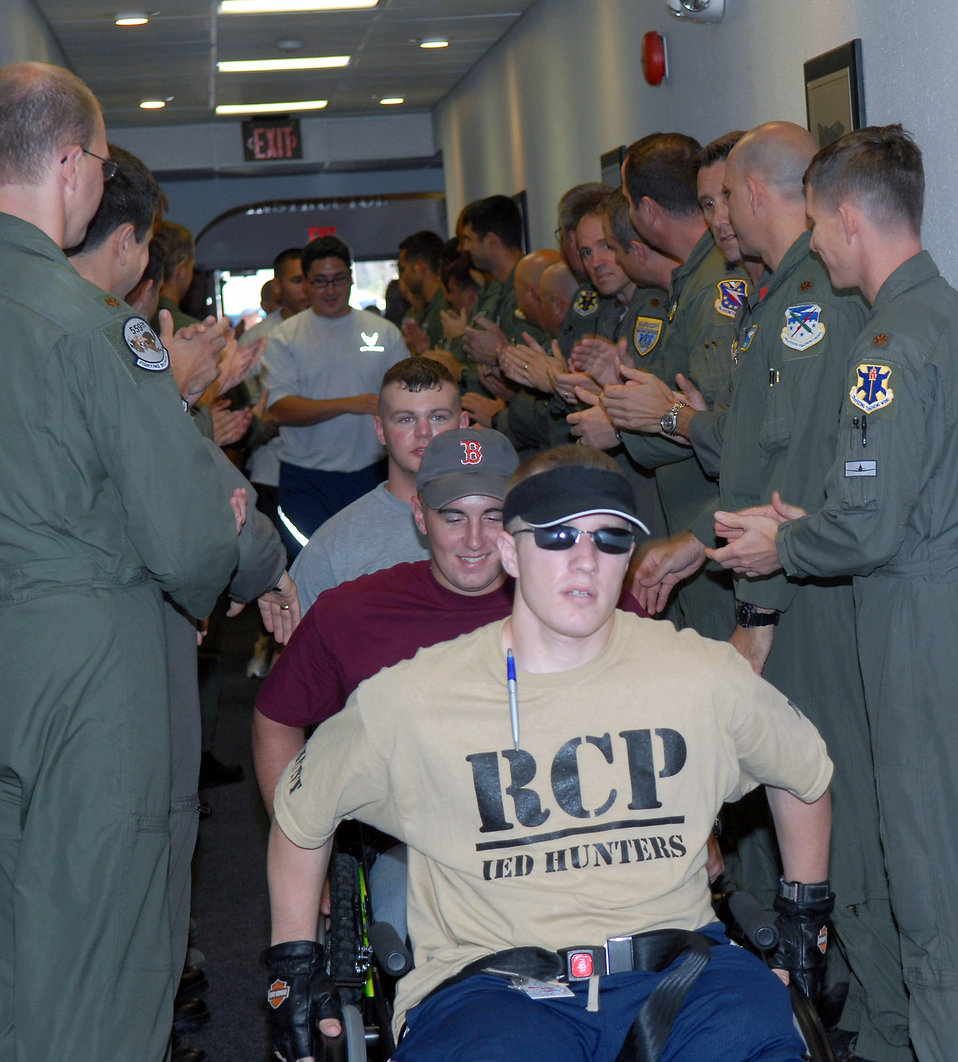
Time to fly

Airmen from the 559th Flying Training Squadron welcome Nate Hunt and 12 other wounded warfighters June 27 as they arrive to fly the flight simulator at Randolph Air Force Base, Texas. The wounded warriors are receiving care at the Center for the Intrepid in San Antonio.